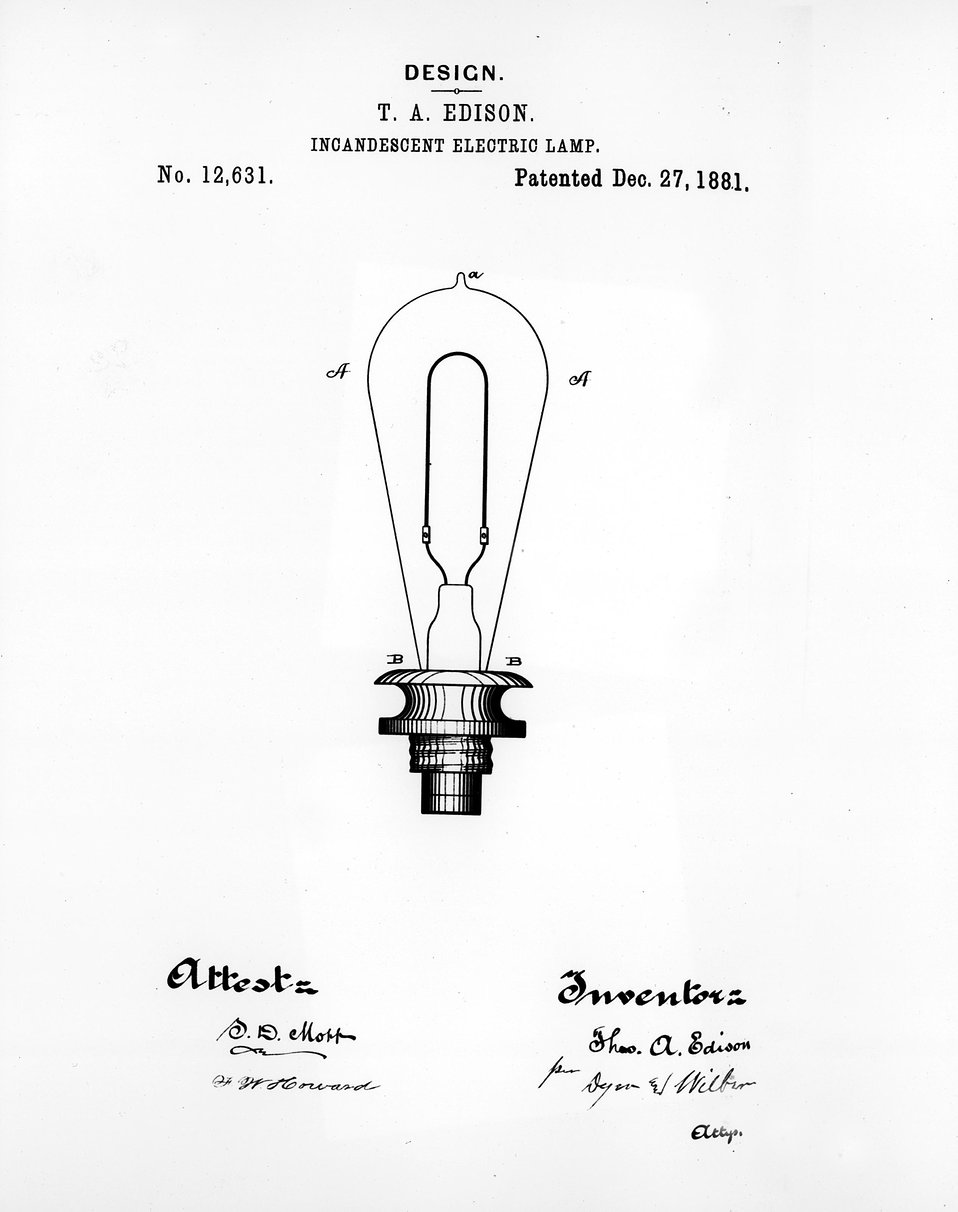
Edison design of incandescent electric lamp, 1881.